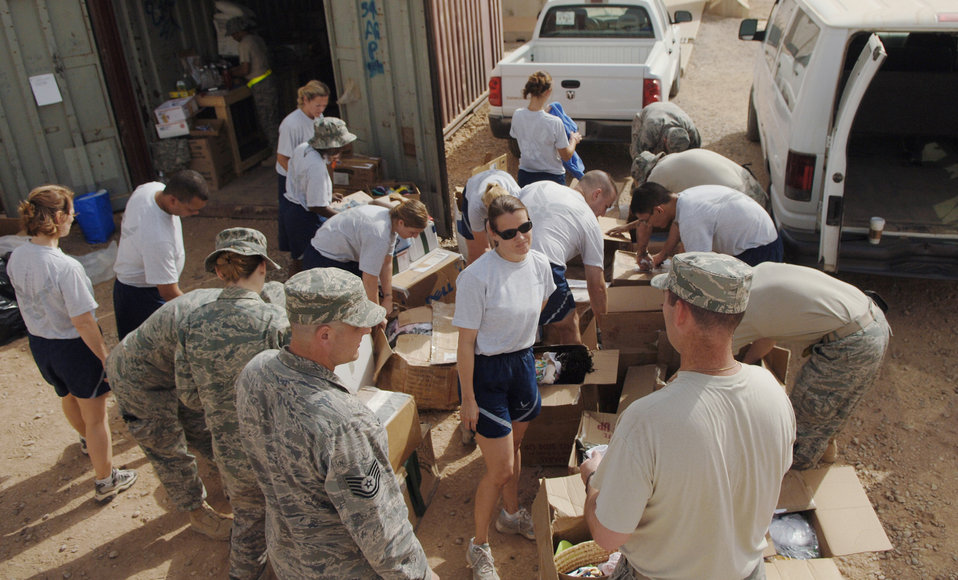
Iraqi children get a kick out of donations

Airmen sort donations of clothing, toys and soccer balls July 15 at Joint Base Balad, Iraq. The Pennsylvania State University chapter of the Phi Kappa Tau fraternity sponsored a donation drive at a soccer tournament in June, and then shipped the balls here for distribution to children near Balad.